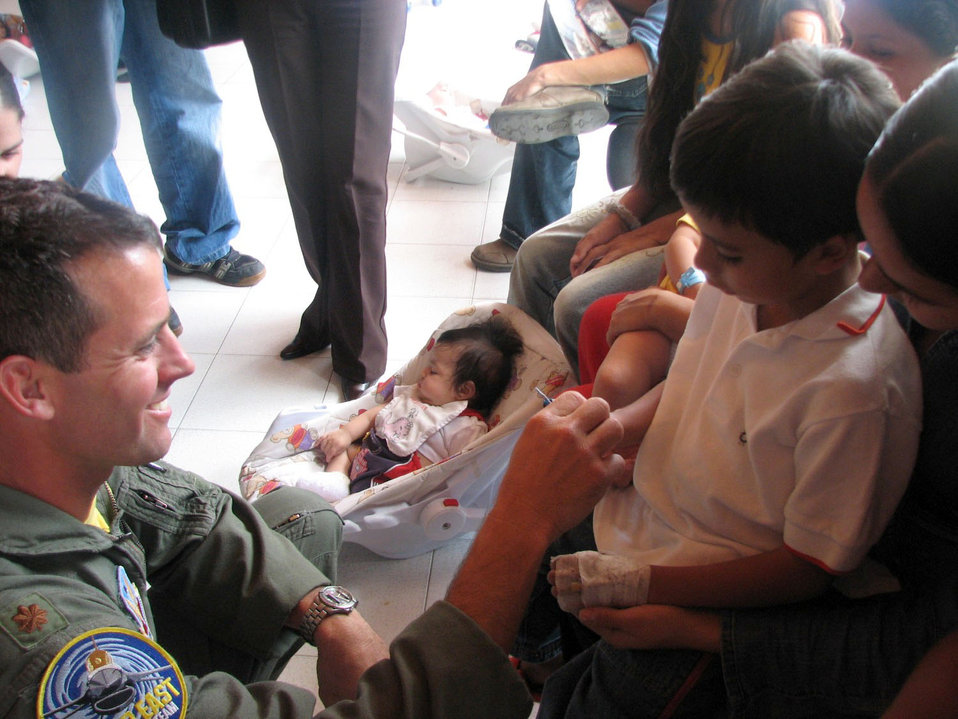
Spreading goodwill

Maj. Jason Koltes visits with children at the Clinica Infantil Santa Ana, a children's hospital in Medellin, Colombia, on Sunday, July 2. Major Koltes is the commander and a pilot for the F-16 Fighting Falcon Viper East aerial demonstration team. The team was in Colombia for the Rio Negro air show.